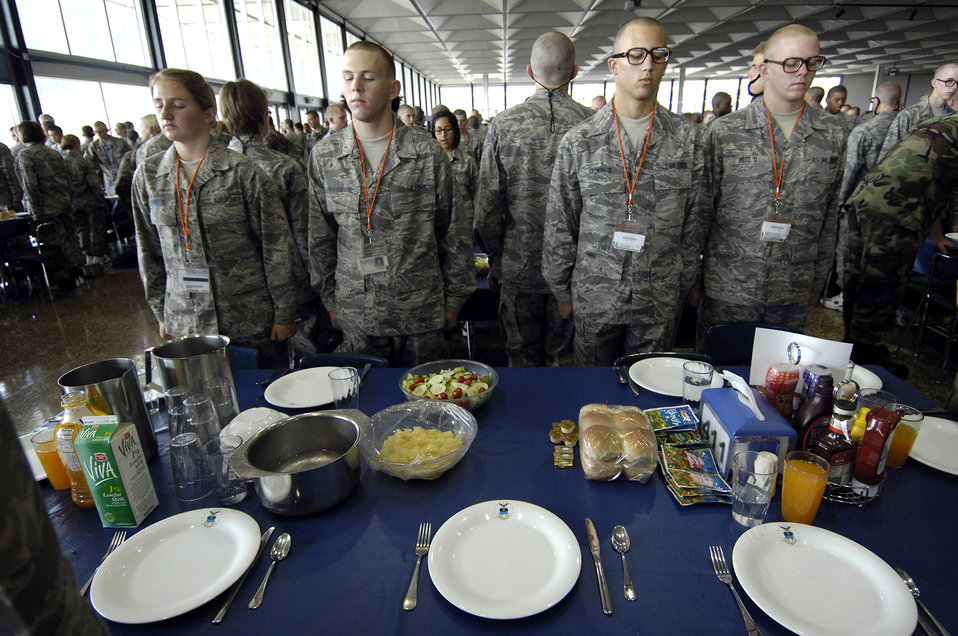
Class of 2012 Arrives

All eyes are focused on the eagle at the 12 o'clock position on the plate as basic cadets are taught meal procedures on Day Two of the 38 days of Basic Cadet Training June 27 at the U.S. Air Force Academy, Colo. Inprocesing marks the start of 38 days of Basic Cadet Training, which is designed to prepare basic cadet trainees for entry into the cadet wing.